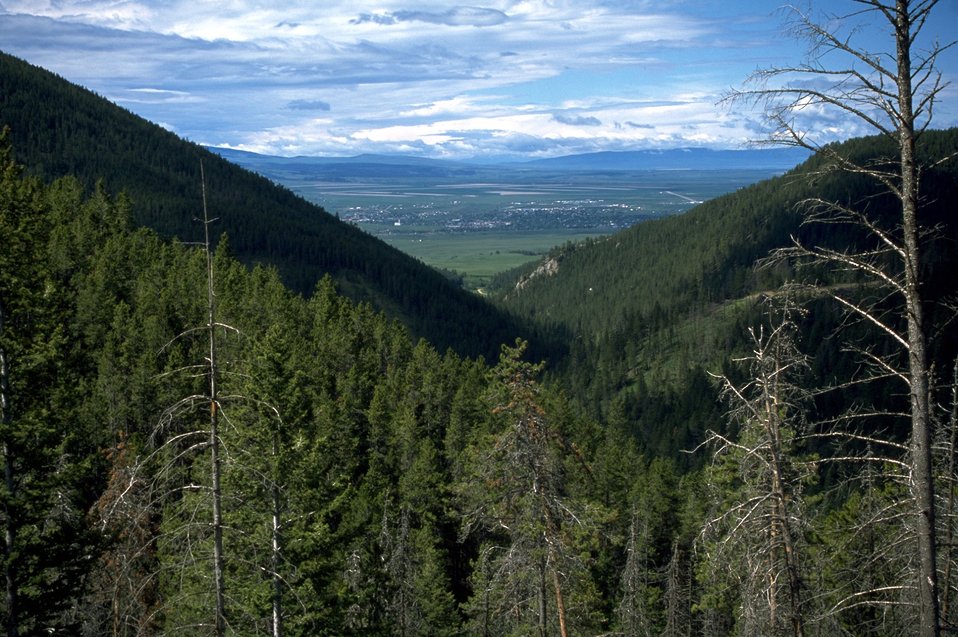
Lewistown MT nestled between two mountains in the Judith Mountains